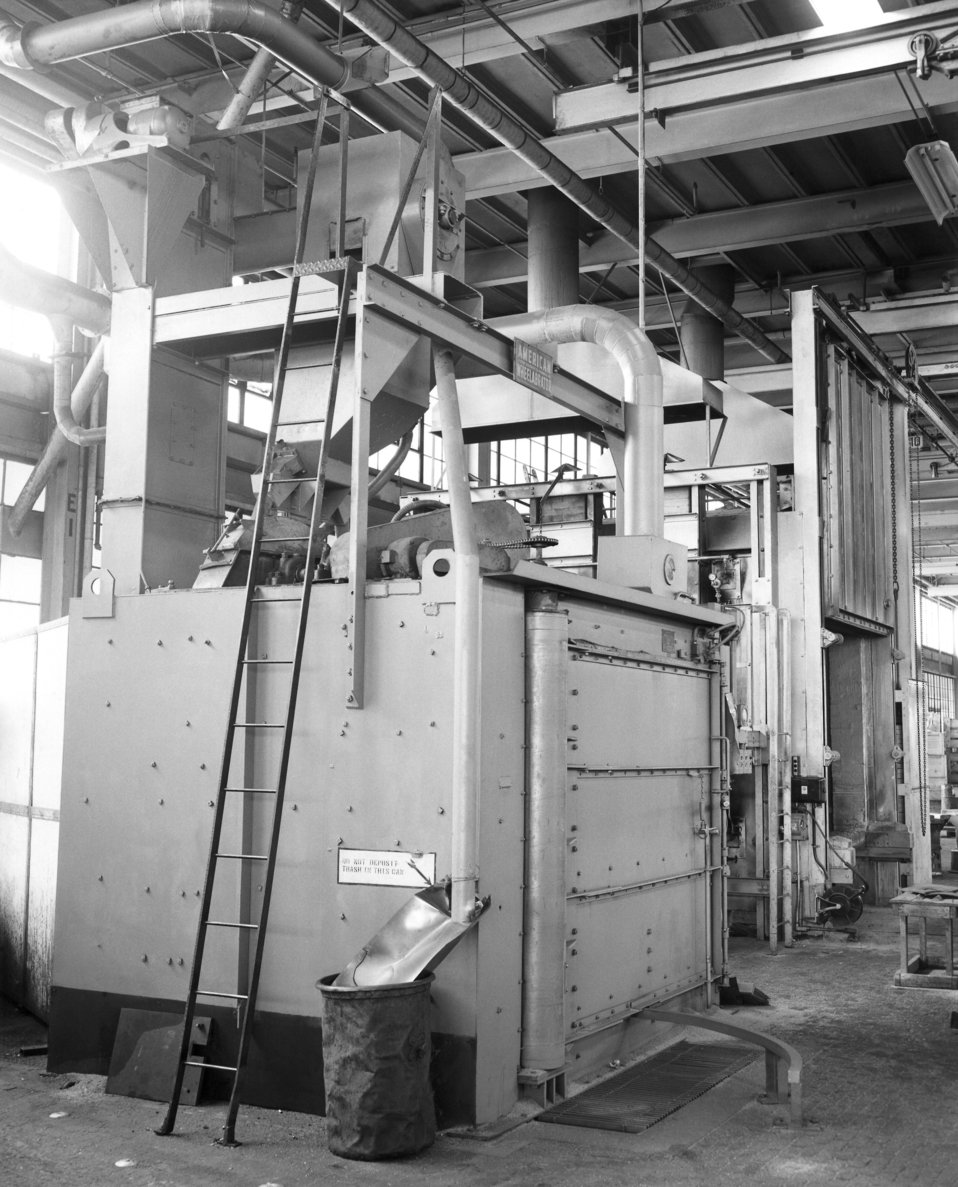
This historical 1953 photograph was provided by the Center for Disease Control's (CDC), National Institute for Occupational Safety and Health (NIOSH). Inside the Baltimore, Maryland Crown Cork and Seal Co., this image depicted a 'Wheelabrator�', a machine that houses a self-contained process used to scour the scale from the surface of metal parts in preparation for further processing such as plating. The self-contained nature of the scouring process, which employs steel shot abrasion, acted to protect the machine operator from liberated particulate- and fume-biproducts. Note the ventilation ducts above the hopper, which were used to remove noxious fumes from the environment.